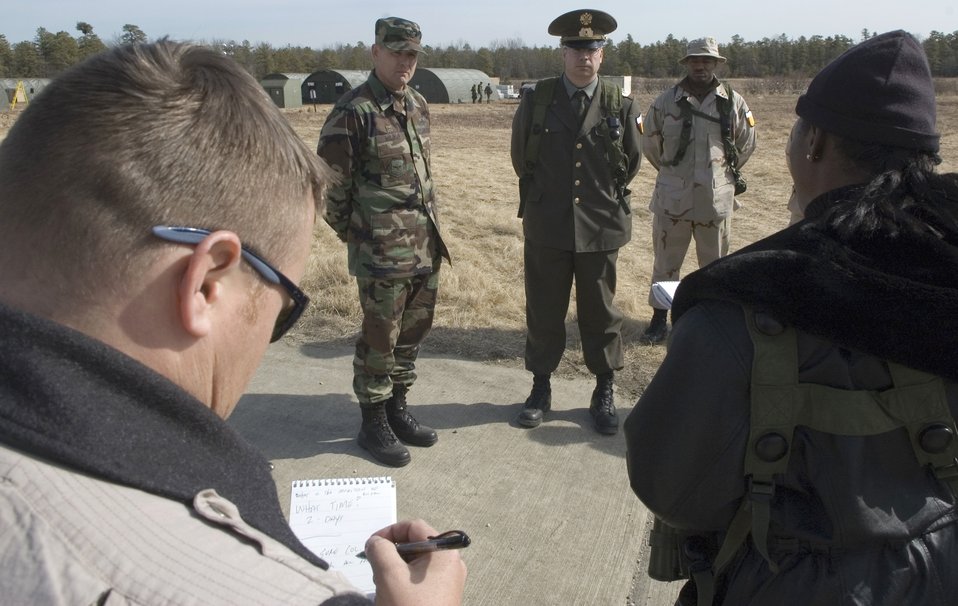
Exercise Eagle Flag 0306

Col. Eric Wilber from Pope Air Force Base, N.C., left, and Master Sgt. Kevin Edwards, playing the role of a foreign military colonel, field questions from a reporter during a press conference scenario at Exercise Eagle Flag at Naval Air Station Lakehurst March 6, 2006.